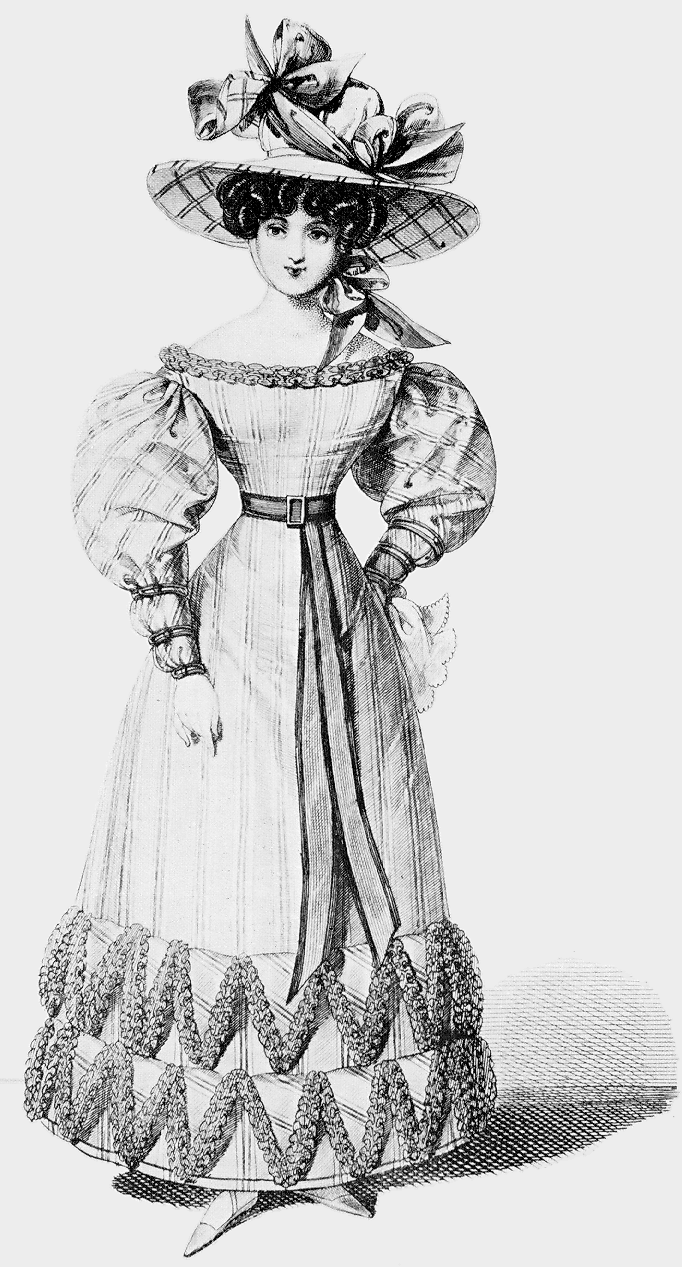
1826-Wiener-Moden-fashion-plate